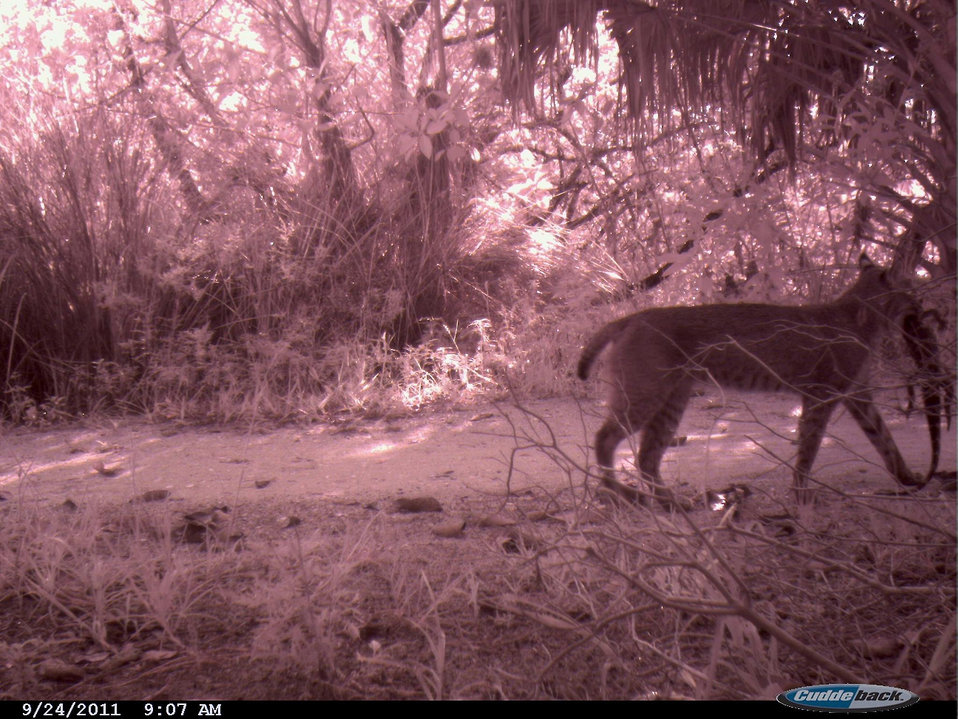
bobcat with young alligator prey

J.N. Ding Darling National Wildlife Refuge, FL
Camera trap photo: USFWS